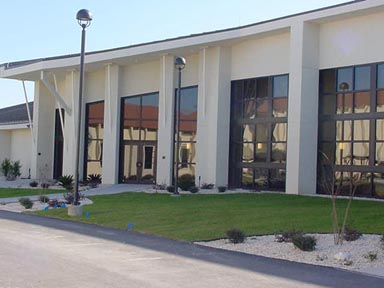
AFNORTH Airmen assist with Haitian relief efforts

Air operations experts at Air Forces Northern at Tyndall Air Force Base, Fla., are assisting 12th Air Force and Air Forces Southern with humanitarian aid efforts following the Jan. 12, 2010, magnitude 7 earthquake that devastated Haiti.The 601st Air and Space Operations Center is supporting the 612th Combined Air and Space Operations Center, which is headquartered at Davis-Monthan AFB, Ariz.